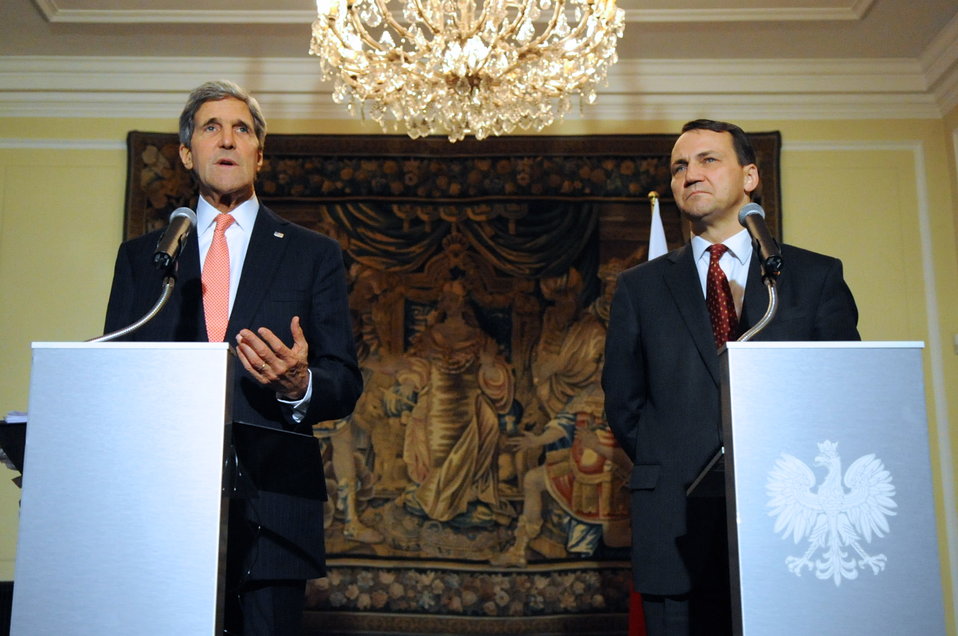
Secretary Kerry and Polish Foreign Minister Sikorski Address Reporters

U.S. Secretary of State John Kerry and Polish Foreign Minister Radoslaw Sikorski address reporters during a news conference that followed their meeting at Foksal Palace in Warsaw, Poland, on November 5, 2013.